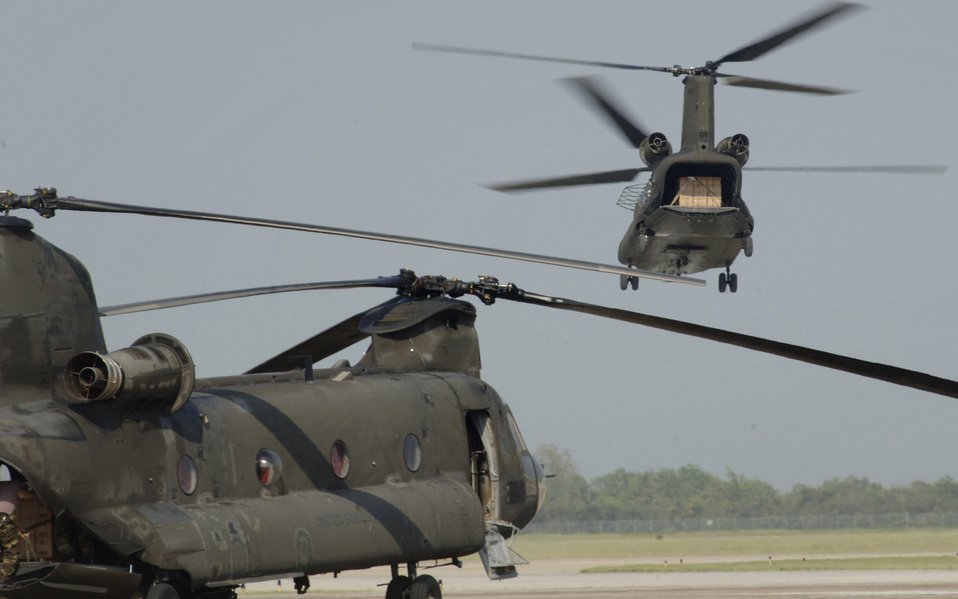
Meals Ready to Eat

ELLINGTON FIELD, Texas - An Army CH-47 Chinook takes off from here to deliver food and water supplies to an airfield in Hawthorn, Texas. Aircraft activity increased dramatically here in support of Hurricane Rita relief efforts. Active duty, Guard and Reserve components of the Air Force, Army, and Coast Guard are here in support of Joint Task Force-Rita.